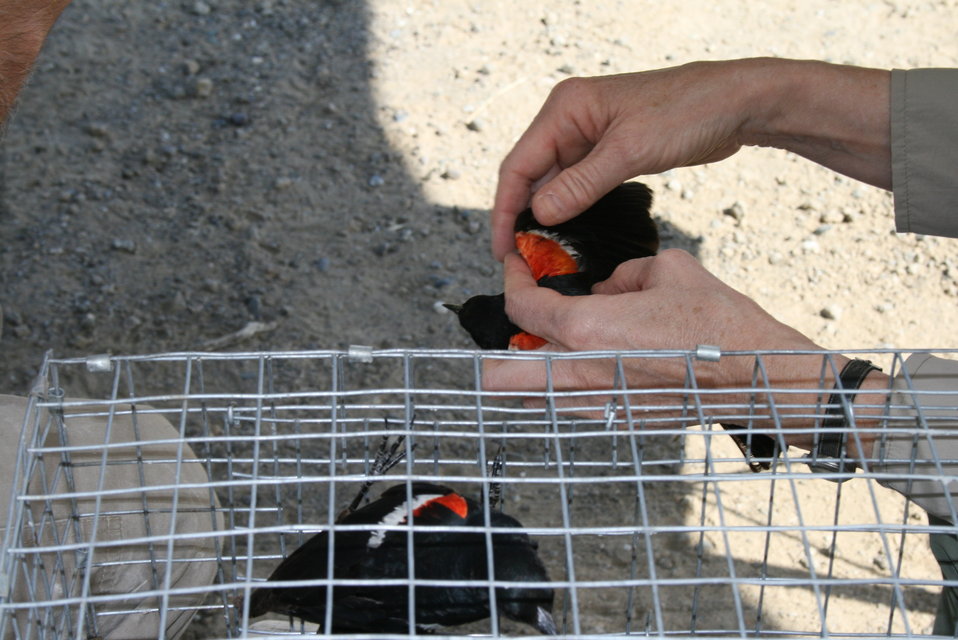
Aging a male Tricolored Blackbird

Karin Laing, USFWS, uses the red color to age the male Tricolored Blackbird. If the male is less than a year old the red will appear more orange and the bird will lack the glossy look of an adult male.